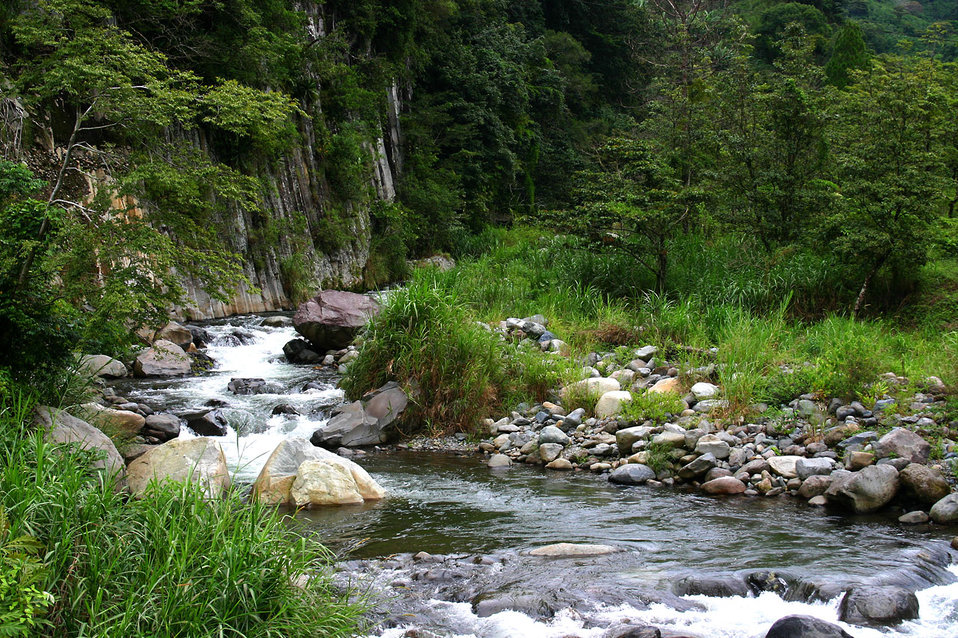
Mountain stream #2

Mountain stream in western panama.